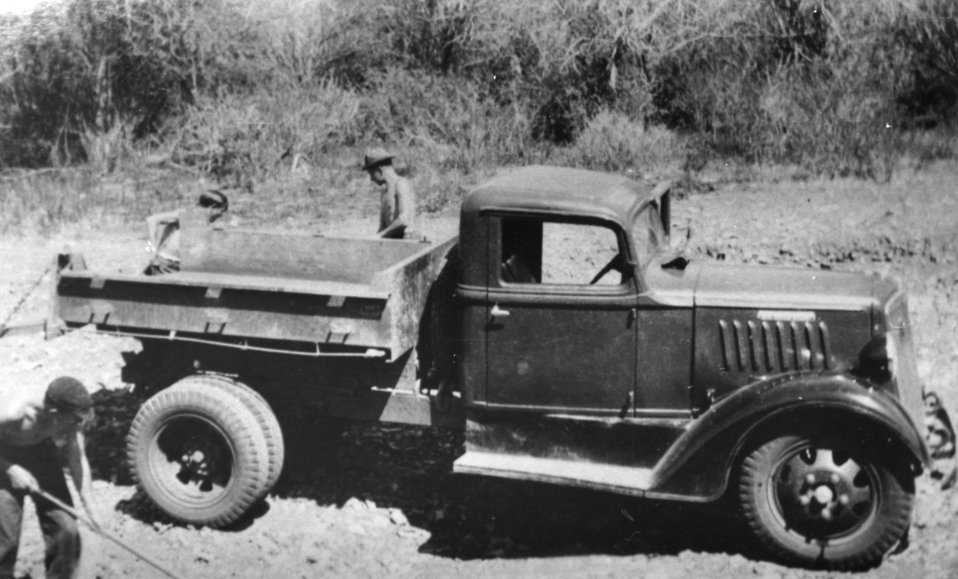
CCC crew from Burns Camp working on conservation (spring development) project. circa 1939 Joe Urbanek Photograph